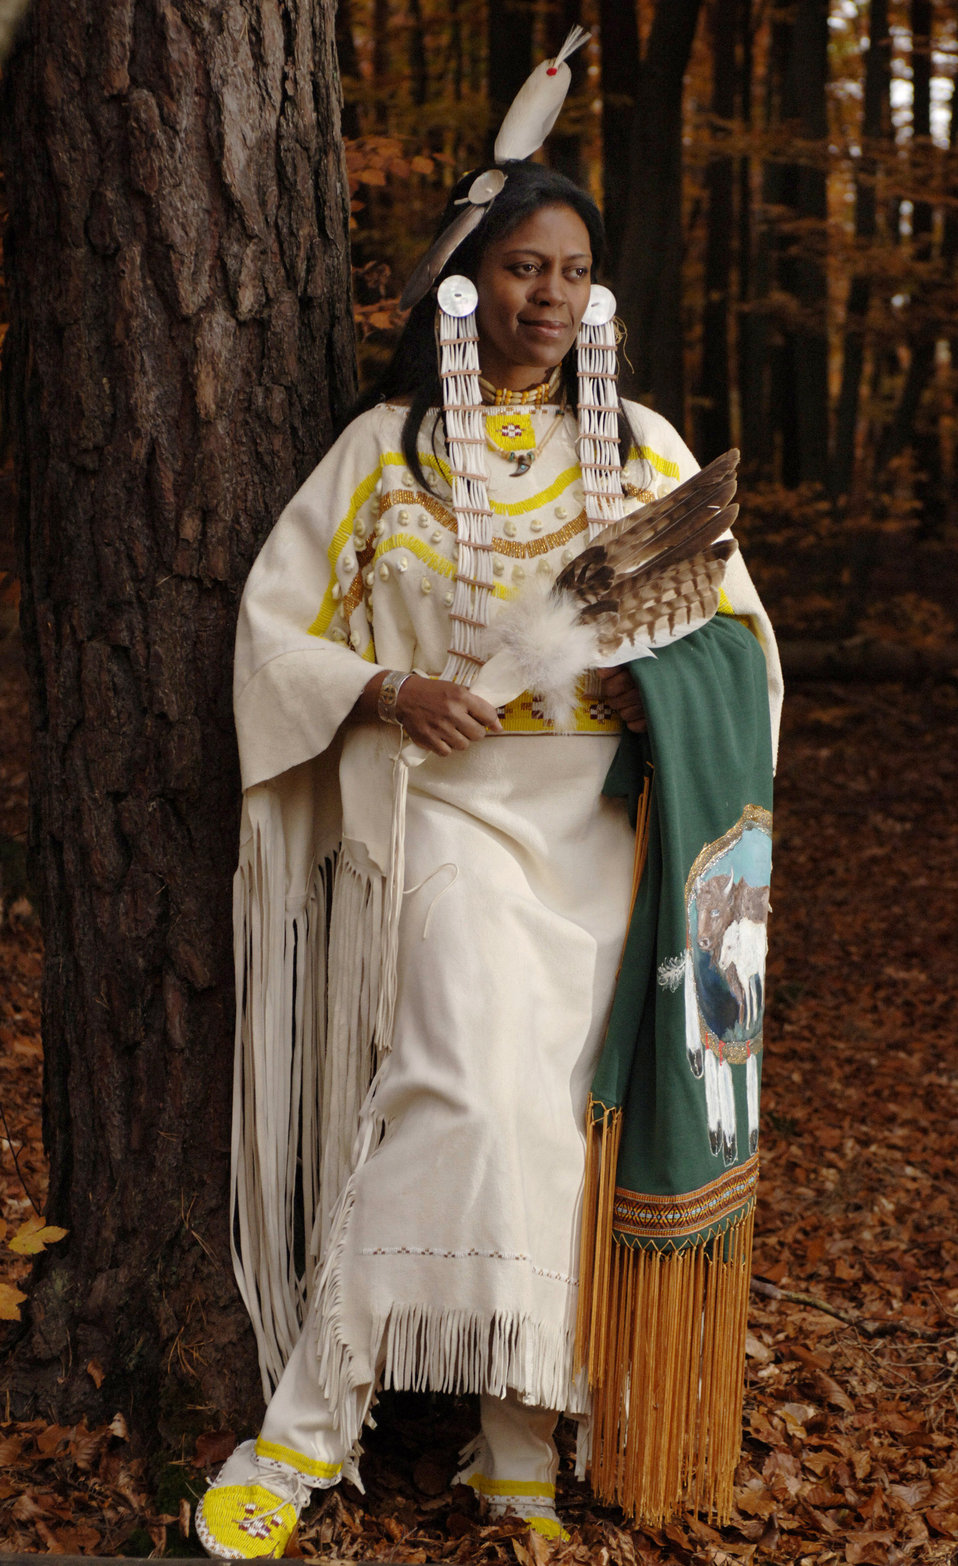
Preserving, remembering the Siksika Nation

Andrea Laboy is a member of the Siksika Nation American Indian tribe. Ms. Laboy is with the 435th Mission Support Squadron at Ramstein Air Base, Germany.